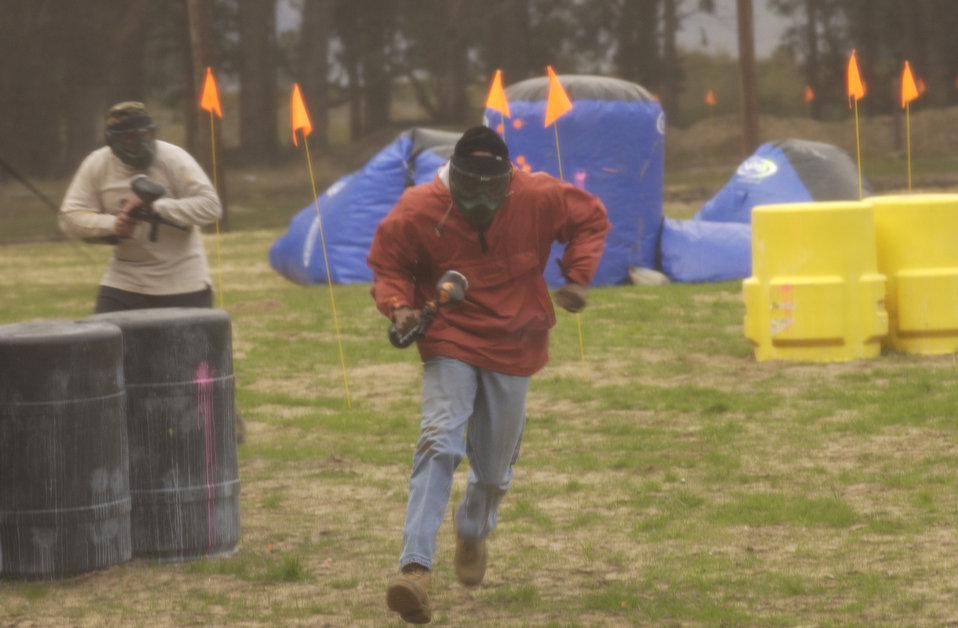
One flight -- several missions

BARKSDALE AIR FORCE BASE, La. (AFPN) -- Barksdale Base Honor Guard member Airman 1st Class Christopher Supanchick holds an American flag in preparation for a funeral flag folding ceremony. The honor guard is an additional function of the readiness section in the Services combat support flight.